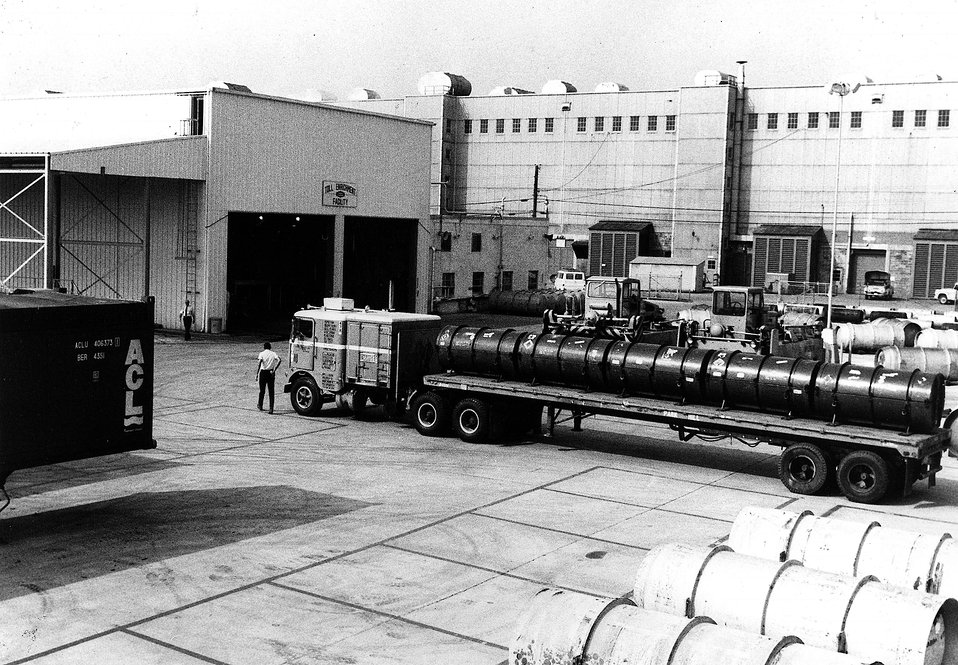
A tractor-trailer prepares to leave the toll enrichment facility at the Oak Ridge Gaseous Diffusion Plant in Tennessee. Circa 1974.